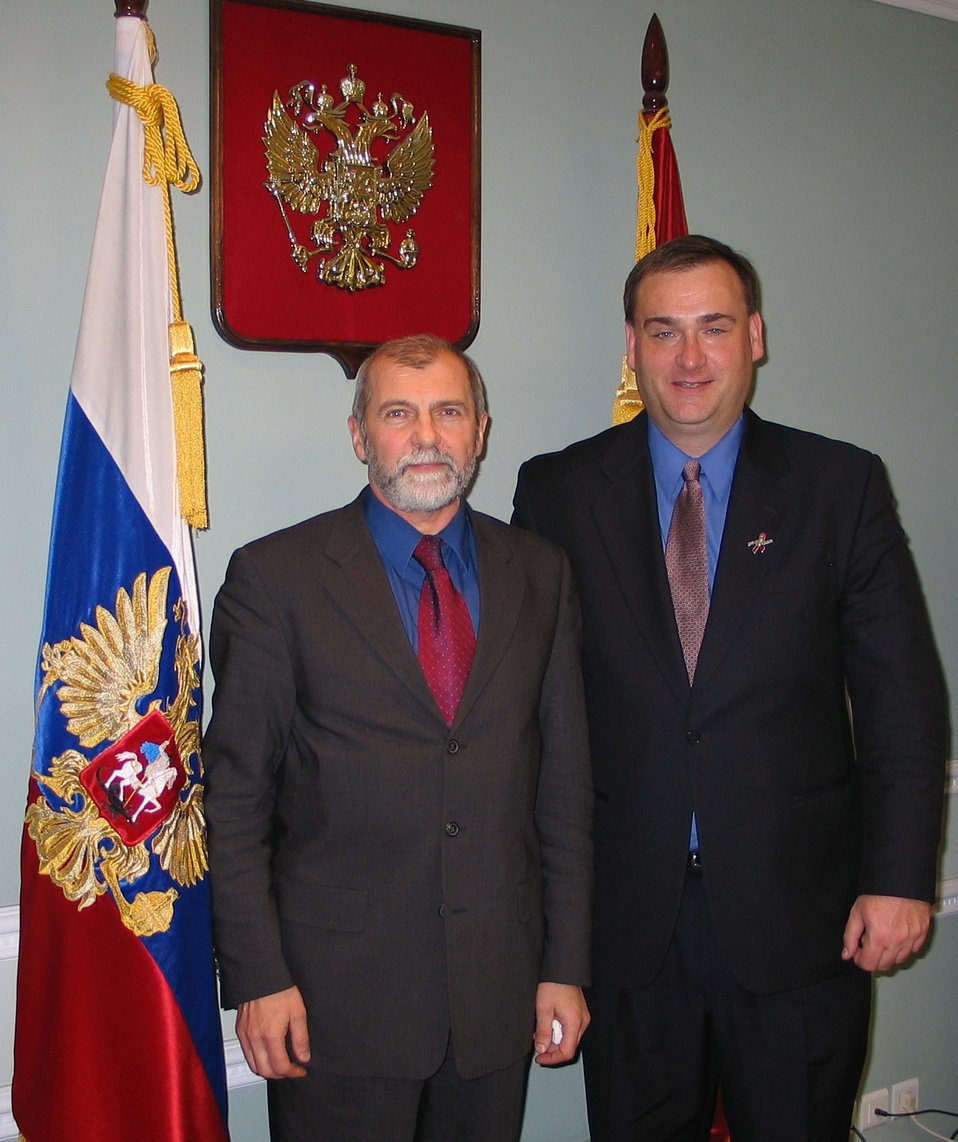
Mikhno and Ward

U.S. Department of Interior officials meet counterparts in the Russian Ministry of Environment and Natural Resources, Moscow.